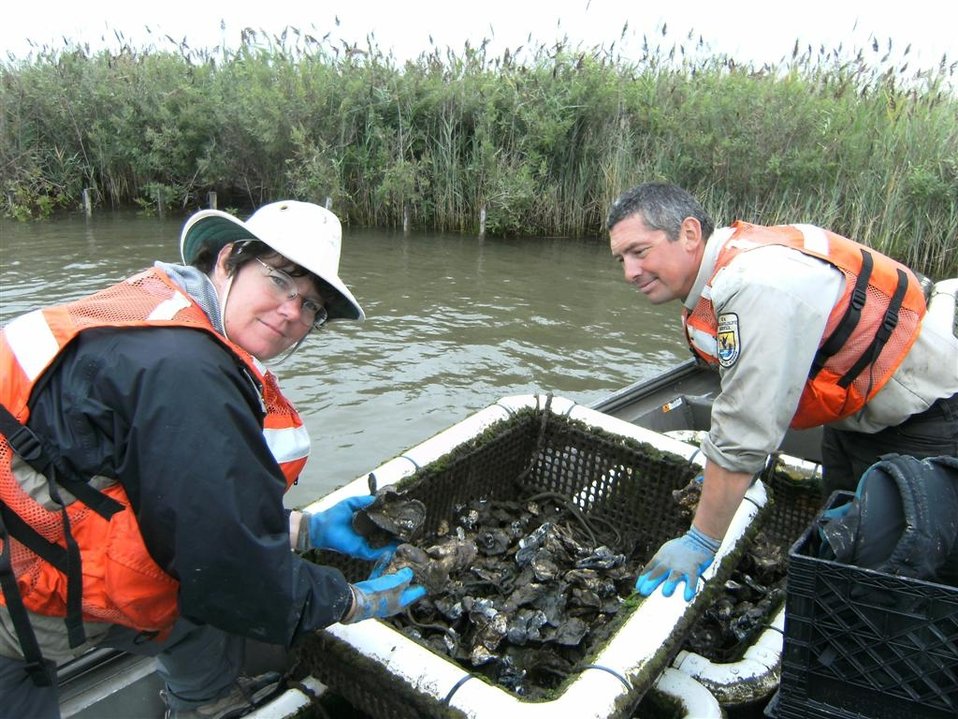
Suzanne Baird and Matt Whitbeck

Suzanne Baird, manager of the Chesapeake Marshlands National Wildlife Refuge Complex, and wildlife biologist Matt Whitbeck plant oysters for a restoration project at Eastern Neck National Wildlife Refuge in Maryland. The Chesapeake Marshlands Refuge Complex includes four refuges on the Eastern Shore of Maryland and Virginia: Blackwater Refuge, Eastern Neck Refuge, Martin Refuge and Susquehanna Refuge.